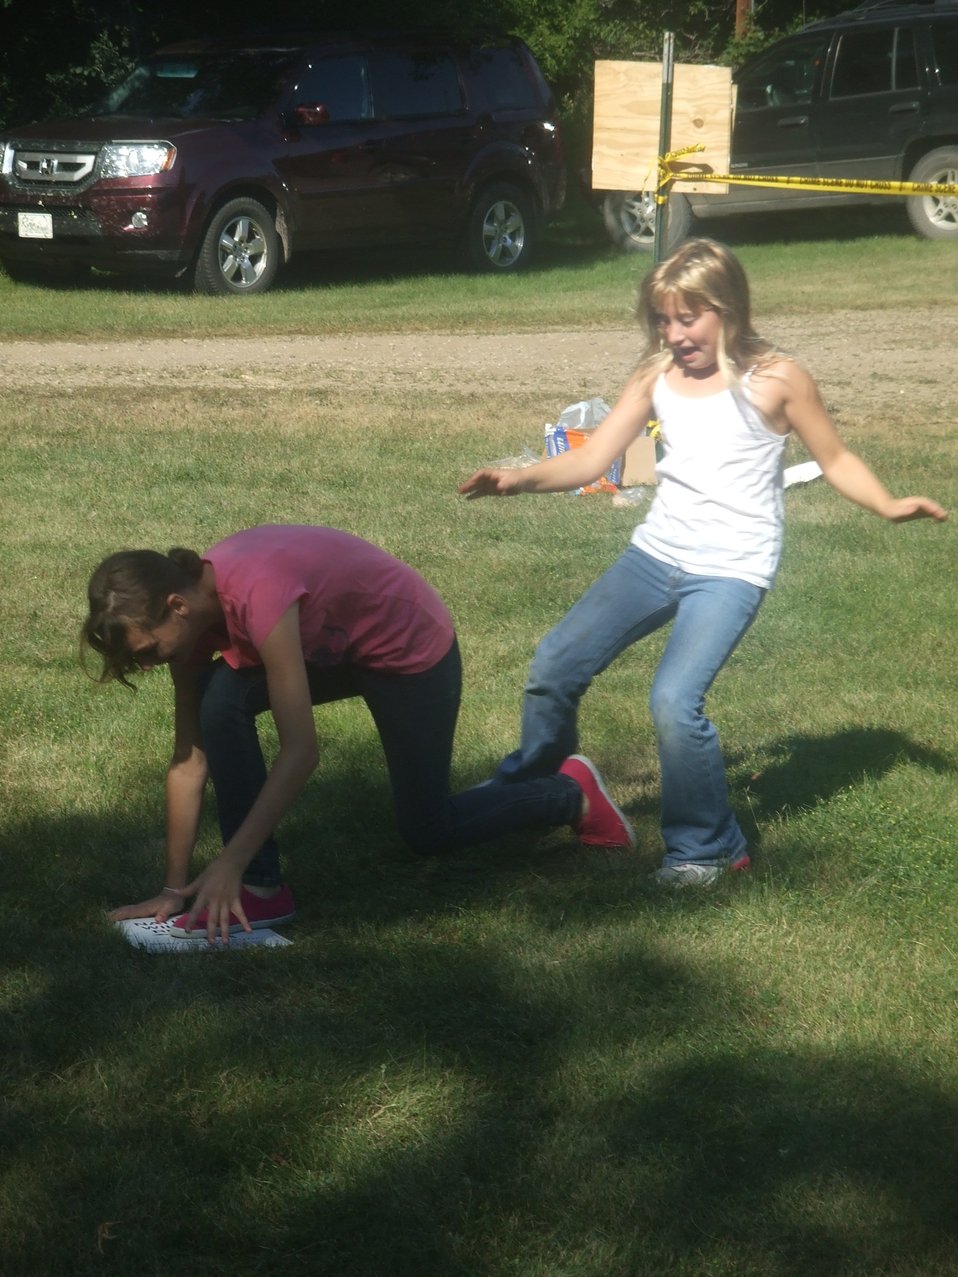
2011 Greenwing Day - Migration Game

Des Lacs National Wildlife Refuge, Tasker's Coulee

SAFE!